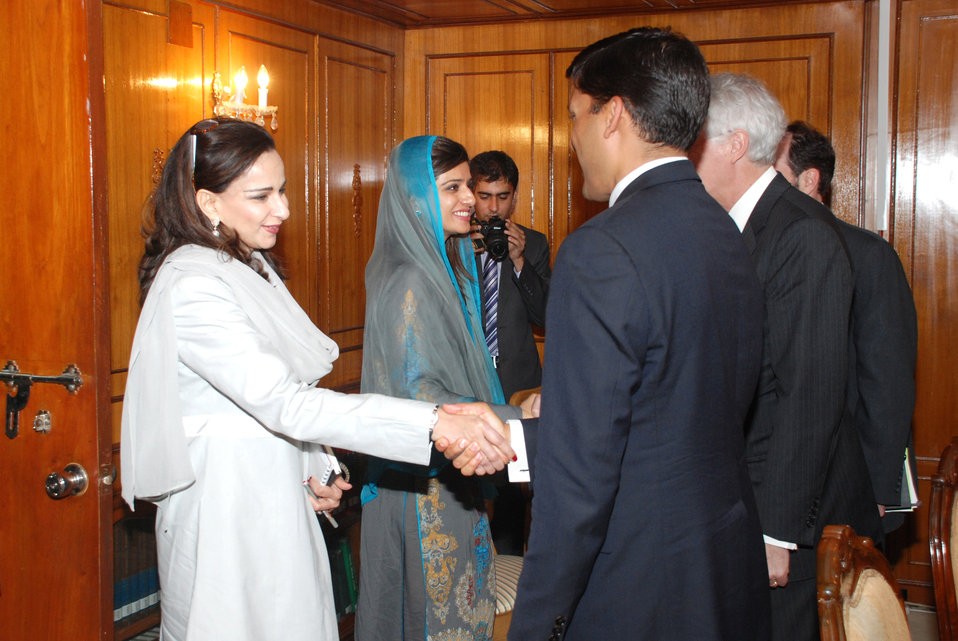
US officials Meeting with Minister of Foreign Affairs, Assistance to Pakistan Remains Strong at Islamabad on April 14, 2012